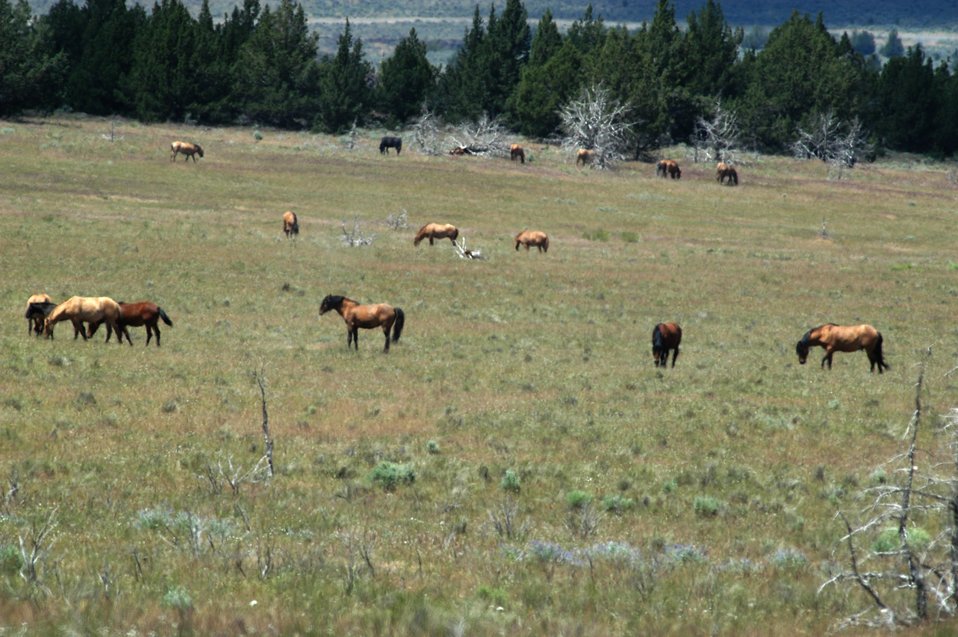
Kiger horses roam the plateaus of the Kiger Wildhorse Herd Management Area near Steens Mountain in Southeastern Oregon.